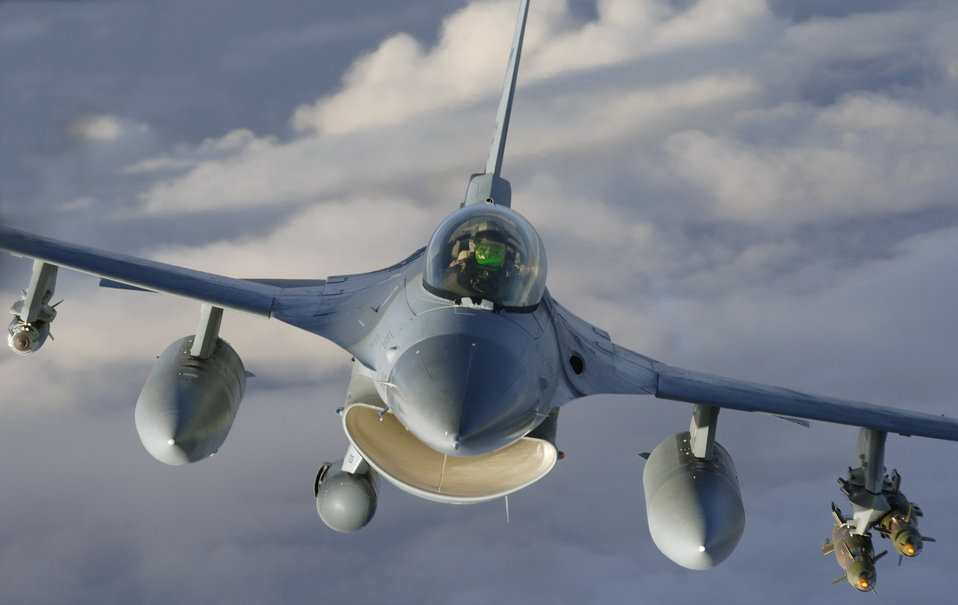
Coalition forces support

An F-16 Fighting Falcon deployed from Cannon Air Force Base, flies a close-air-support mission Oct. 23 for coalition forces on the ground.